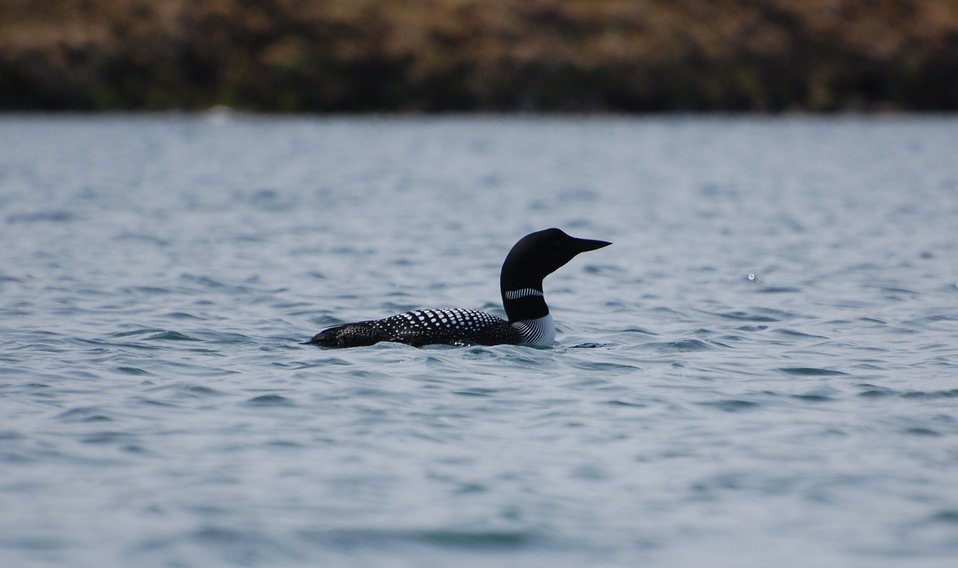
Common Loon

Izembek National Wildlife Refuge